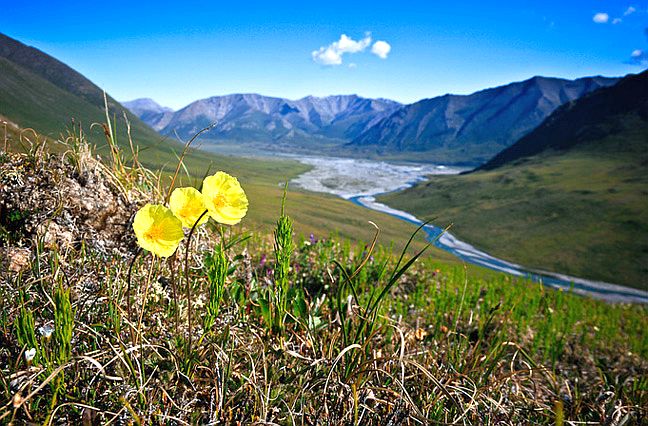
Arctic Refuge

Arctic National Wildlife Refuge wilderness.